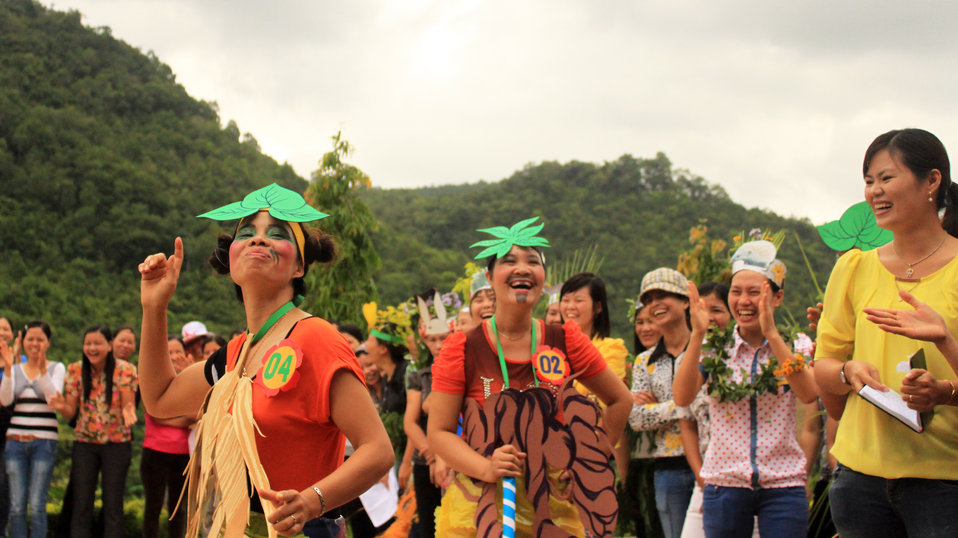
Teachers in Kon Tum practice what they learned from USAID-funded intensive training courses